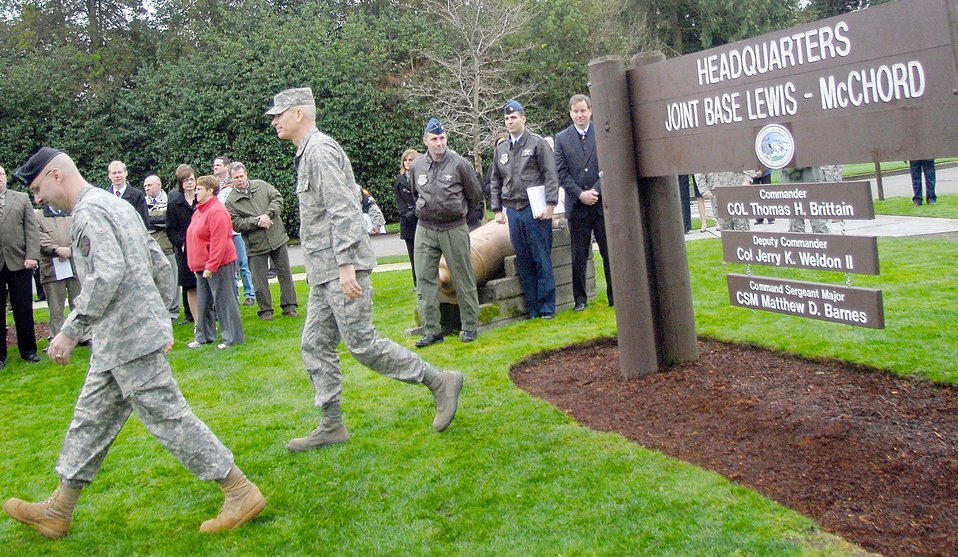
Joint basing

Army Col. Thomas Brittain, left, and Air Force Col. Kenny Weldon walk away from the new headquarters sign after a ceremony marking attainment of initial operational capability for Joint Base Lewis-McChord, Wash., Feb. 1, 2010. The joint installation comprises the former Fort Lewis and McChord Air Force Base.